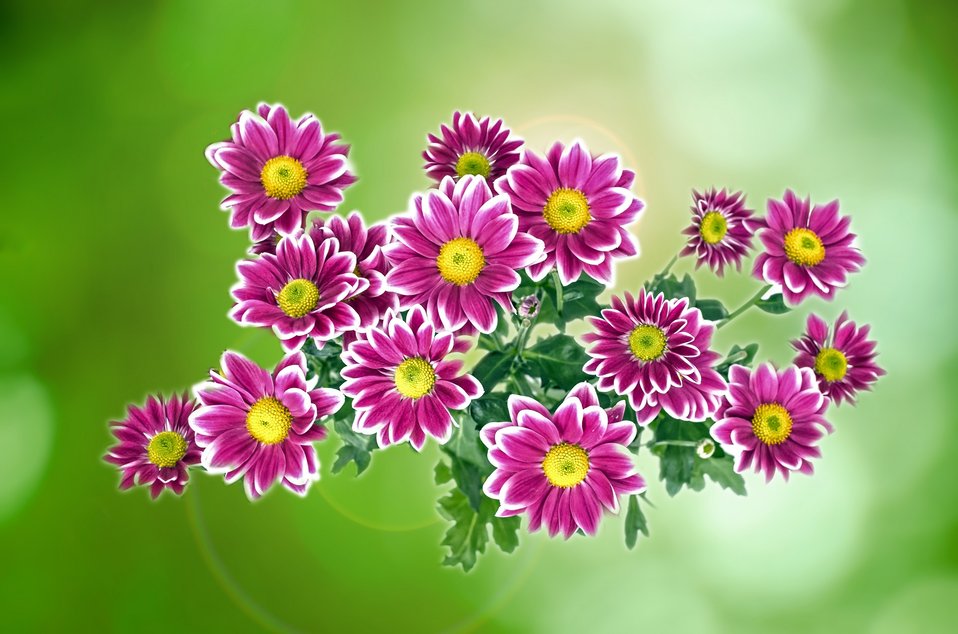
Flowers on the green background.